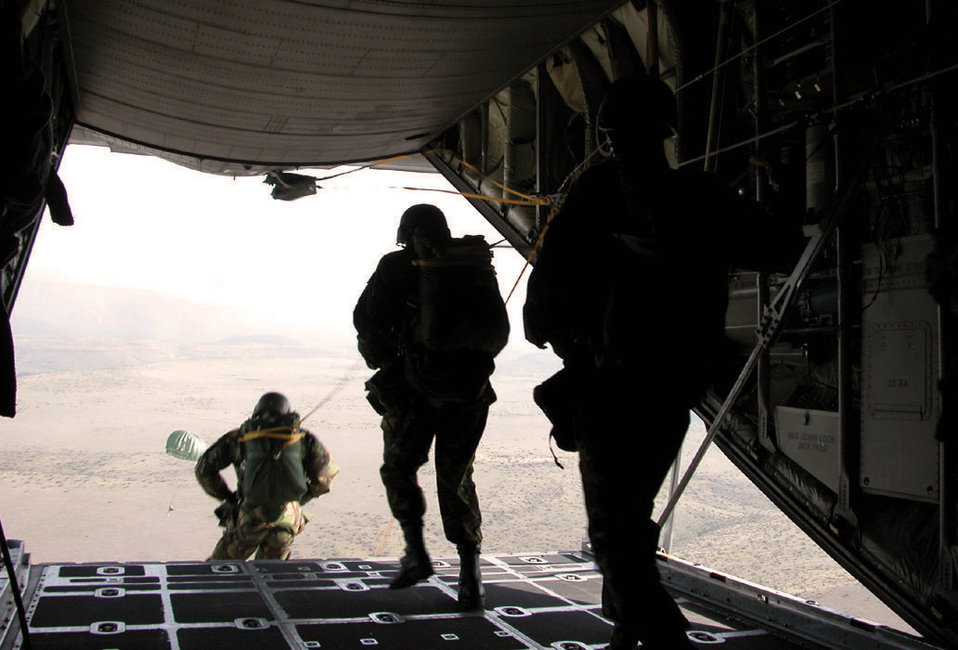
Airmen join Soldiers taking Kenya military to new heights

KENYA -- The last of the 12 U.S. and Kenyan Army paratroopers take the plunge into a drop zone June 6. Before jumping, the drop zone had to be cleared of lions, tigers and zebras.